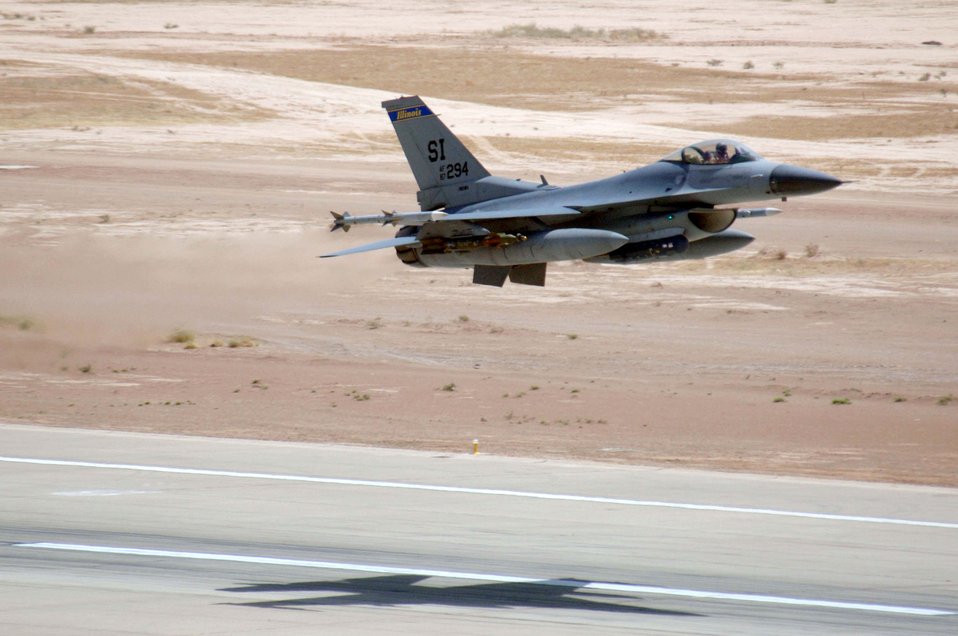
From sand to sky

An F-16 Fighting Falcon assigned to the 332nd Expeditionary Fighter Squadron at Balad Air Base, Iraq, takes off on an Operation Iraqi Freedom mission Friday, July 21. The F-16 jet is deployed from the 183rd Fighter Wing at Springfield Air National Guard, Ill., and provides close-air support and